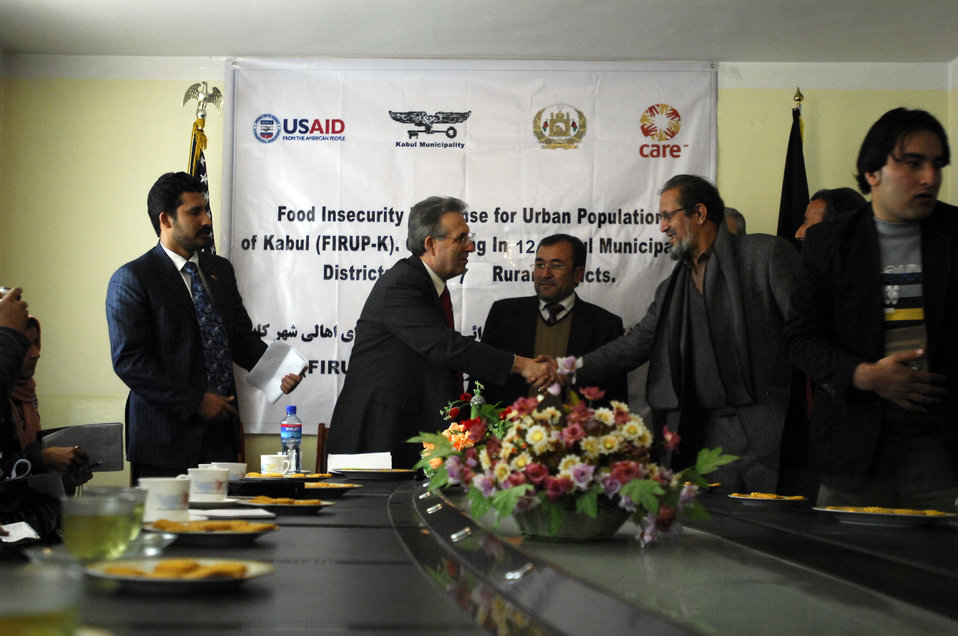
Care76 (1)